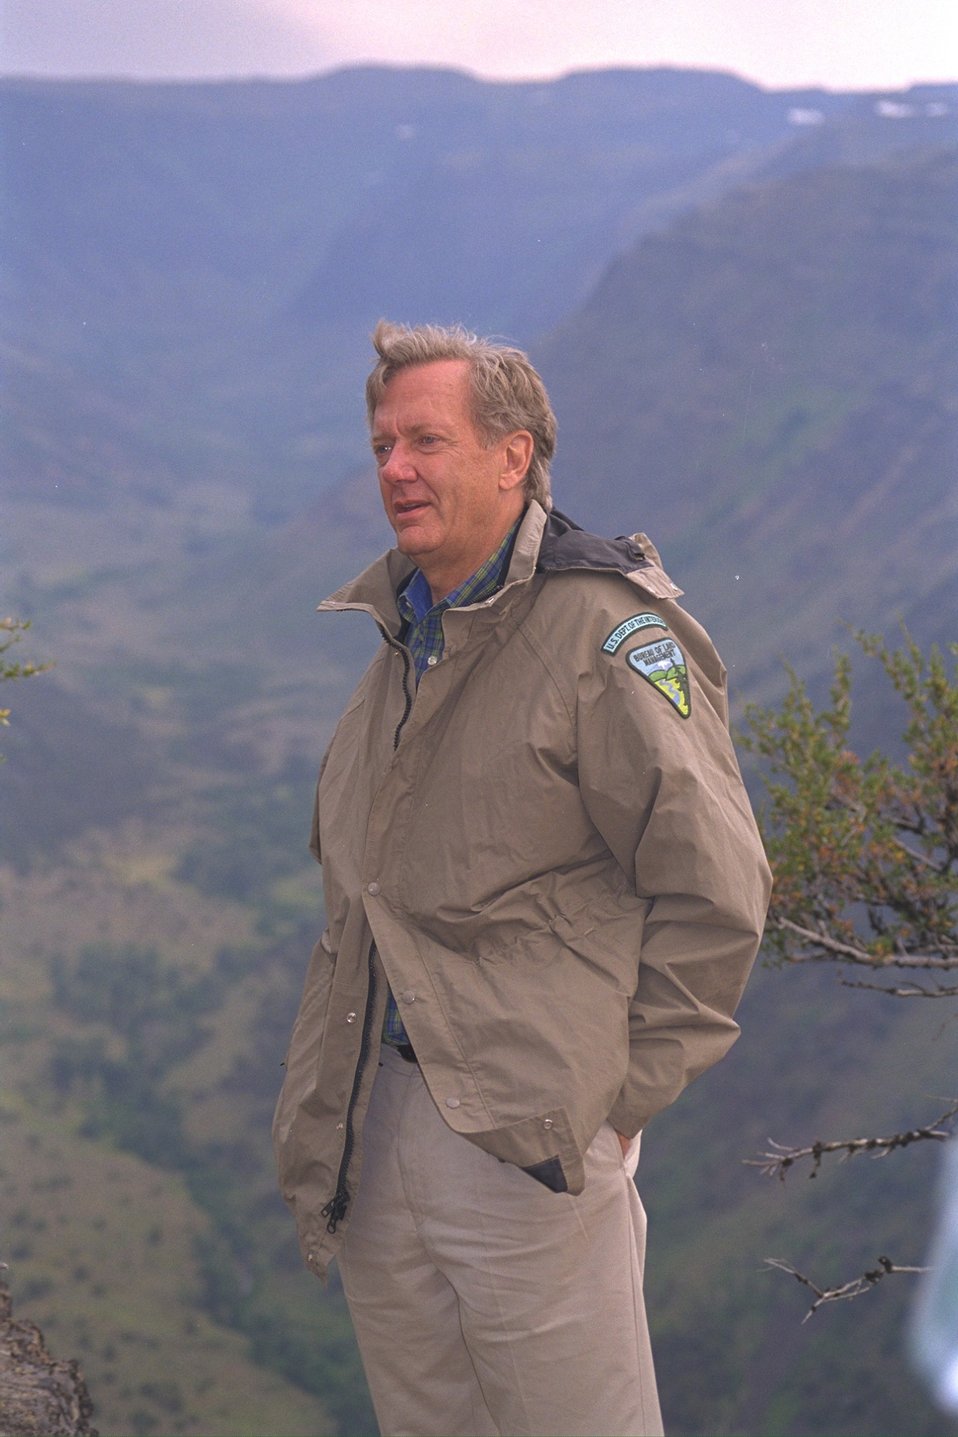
Secretary of the Interior Bruce Babbitt at Big Indian Gorge viewpoint on Steens Mountain.